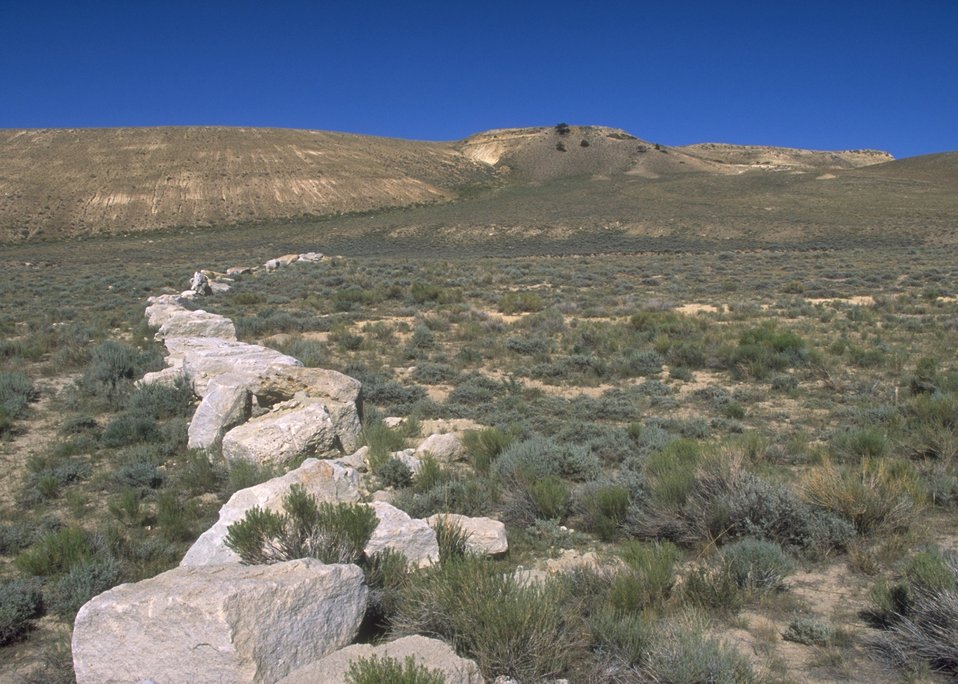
Gas Hill Abandoned Mine Lands in various stages of rehabilitation, Lander Field Office.